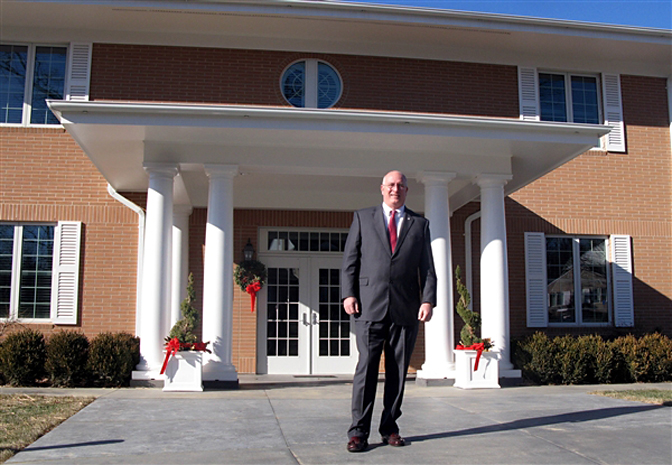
Fisher House program still growing after 20 years

Dave Coker stands in front of one of three new Fisher Houses at the National Naval Medical Center in Bethesda, Md. Mr. Coker is the president of the Fisher House Foundation.